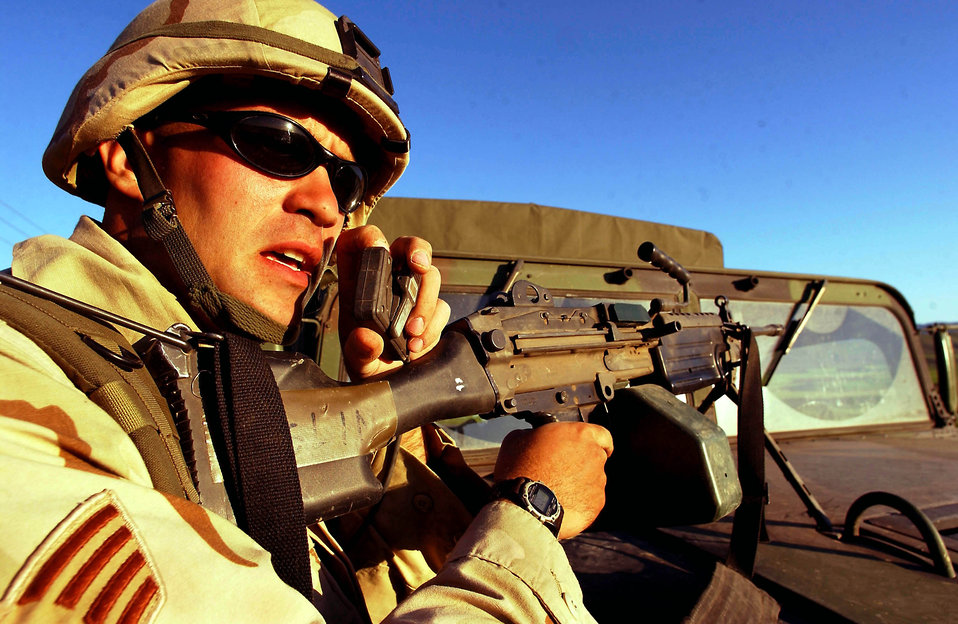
Suspicions

OPERATION IRAQI FREEDOM -- Staff Sgt. Joseph Joslin, a security forces member from Sembach Air Base, Germany, calls in information on a suspicious car while providing security in northern Iraq. .